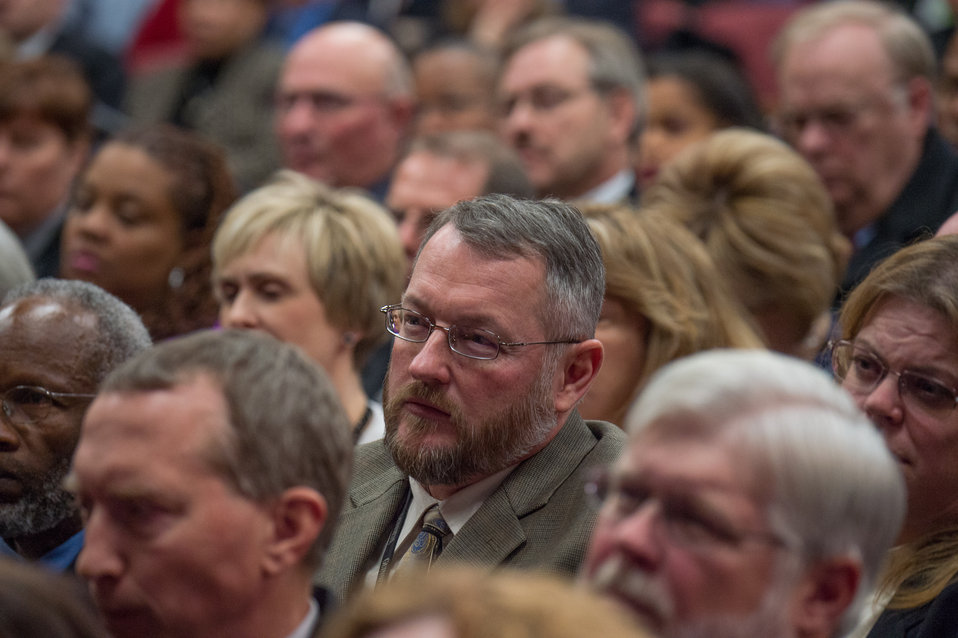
Members of the audience at the 2013 Secretary's Honor Awards ceremony held in the Jefferson Auditorium at the U.S. Department of Agriculture (USDA) in Washington, D.C. on Wednesday, Dec. 11, 2013.